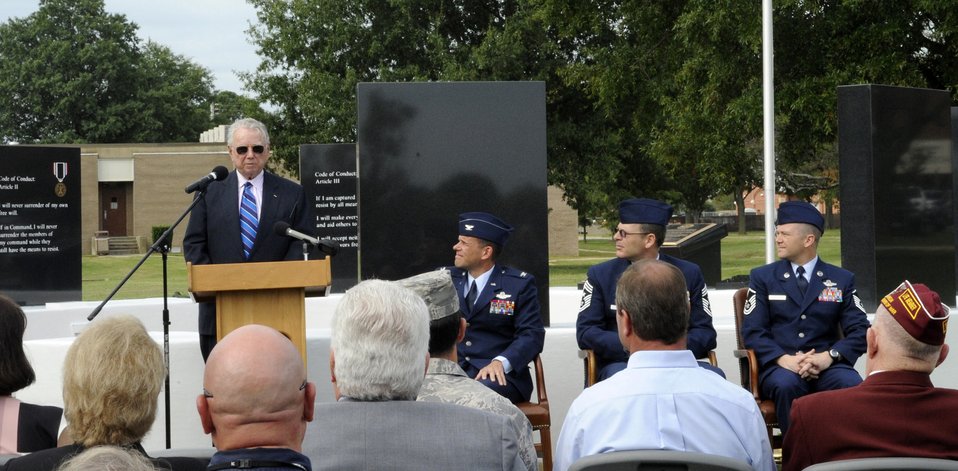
Air Combat Command honors POW/MIA Remembrance Day

Retired Col. Frederick Crow, former prisoner of war, delivers a speech to Airmen and other POWs during a dedication of the Prisoners of War/Missing-in-Action Memorial Sept. 18, 2009, at Langley Air Force Base, Va. Langley Airmen were able to meet with former POWs from World War II, the Korean War and Vietnam War.